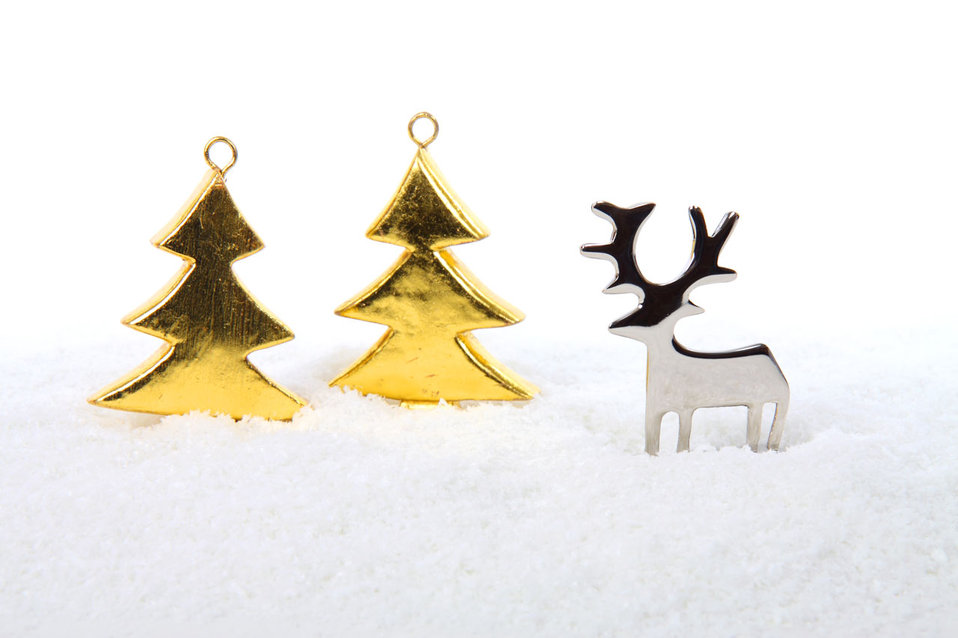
Reindeer in forest christmas decoration.